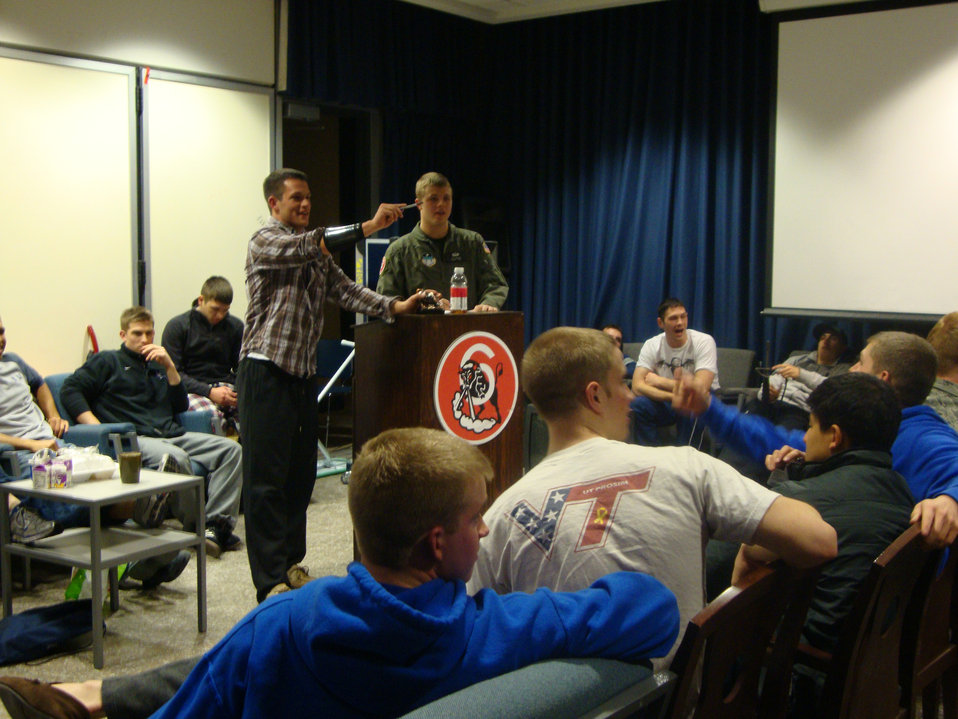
Cadet Squadron raises money

Members of Cadet Squadron 06 at the U.S. Air Force Academy, Colo., hold an auction Jan. 19, 2010, to raise money for Haiti relief efforts. The auction raised more than $2,000, which the squadron will donate to a Combined Federal Campaign-approved relief fund.